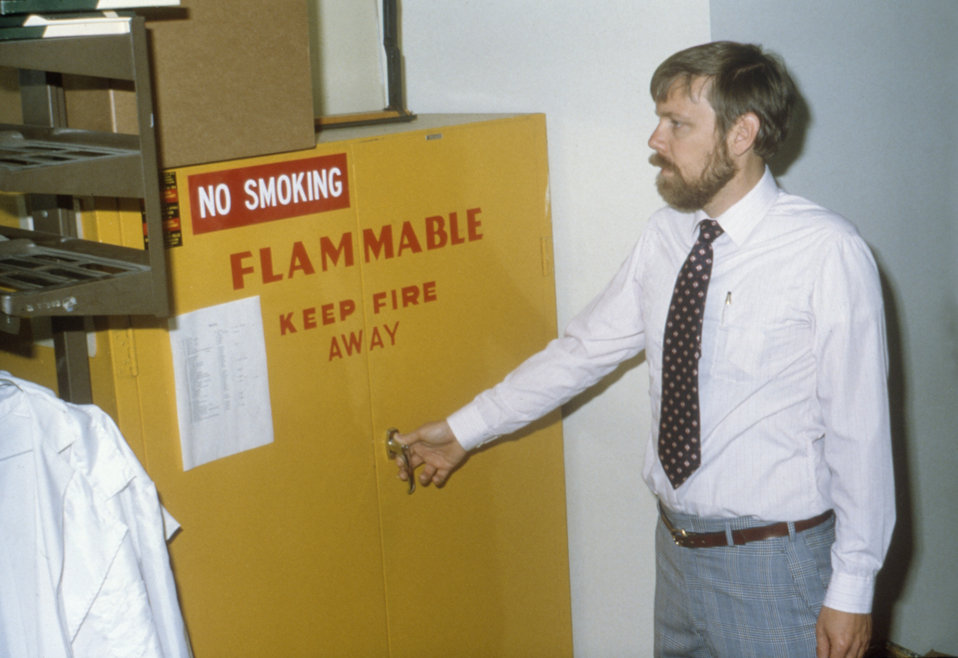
This was former member of the US Public Health Service, William Wagner, ScD, conducting a CDC/ NIOSH laboratory safety study.